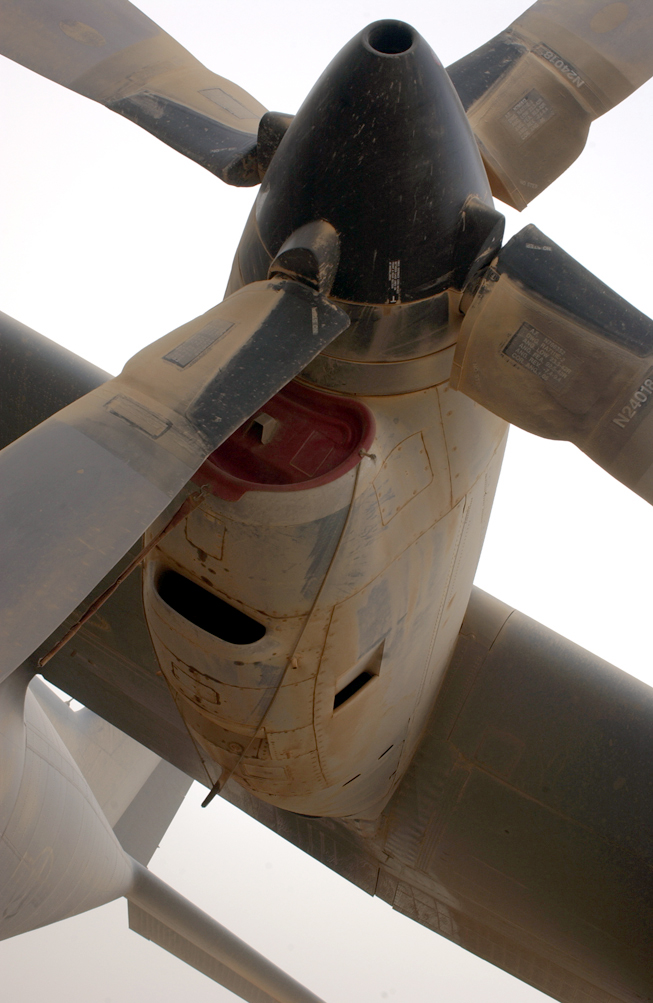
Desert dust in the wind

BAGHDAD, Iraq -- A C-130 Hercules sits grounded because of poor visibility from an overnight sandstorm that brought 40 mph winds and a blanket of dust here recently. The C-130 is assigned to the 910th Airlift Wing in Youngstown, Ohio.